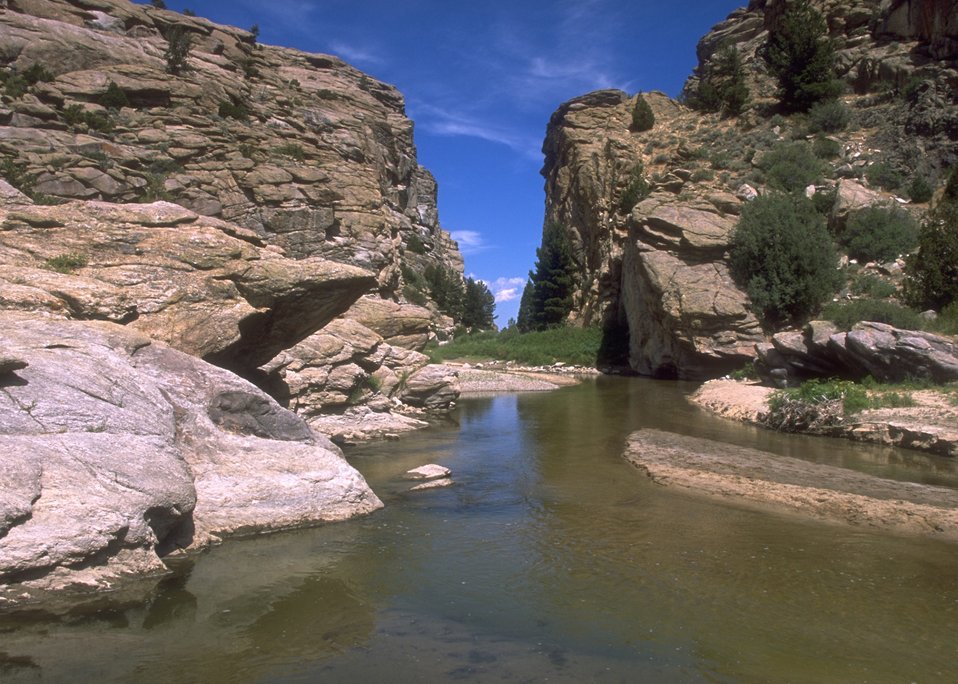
Devil's Gate historic site, Rawlins Field Office.